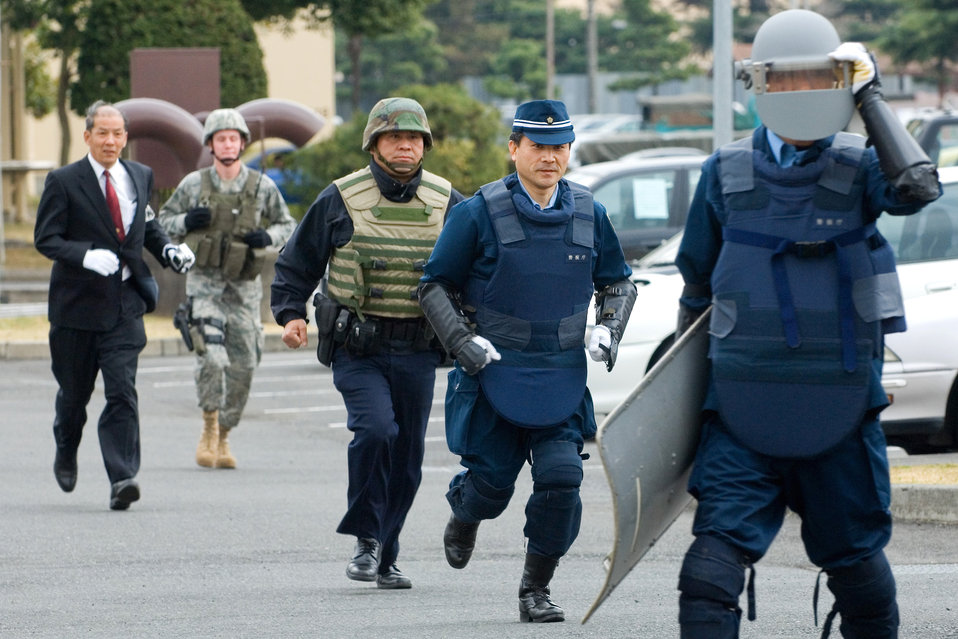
Yokota Airmen train with Japanese police

Members of the 374th Security Forces Squadron and the Japanese National Police-Fussa Division respond to a unexploded ordnance